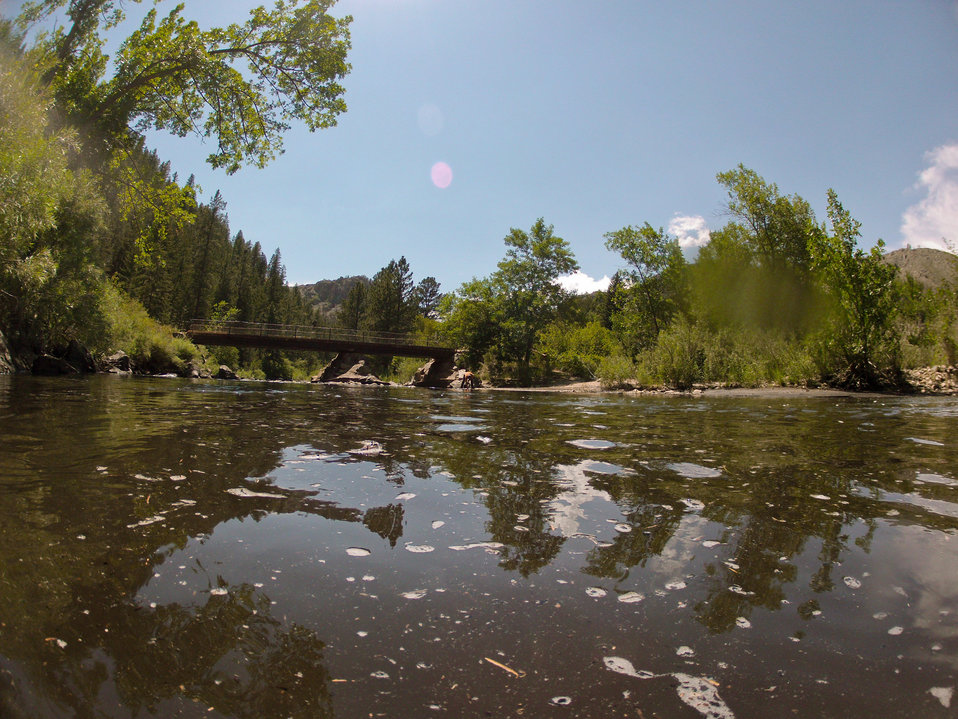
U.S. Department of Agriculture District Conservationist Todd Boldt digs down into the riverbanks and finds ash 18 inches below the surface, at the water’s edge; a result of the Hewlett Gulch Fire (May 14, 2012), in the Poudre Canyon area, near Fort Collins, Colorado on Friday; July 20; 2012. Unmitigated runoff has turned the water in this river from clear to nearly black heavily laden with ash, silt, and burnt debris that recent thunderstorms have washed down from the mountainsides. At its peak more than 400 firefighters were battling fires pushed by 50 mph winds. When the last embers were cooled, more than 12-square miles lay blackened at a cost of approximately 3.2 million dollars to fight. The aerial distribution of straw has successfully kept nearby Seaman Reservoir clean for the drinking water of the City of Greeley. Forest Service lands receive straw; while private and other lands receive a seed mix and straw to promote ground cover plant growth on ash-covered lands. In total; 1; 800 tons of straw will be applied during the 14-day operation. One quarter of the cost was paid by the City of Greeley and the U.S. Department of Agriculture funded the remainder.